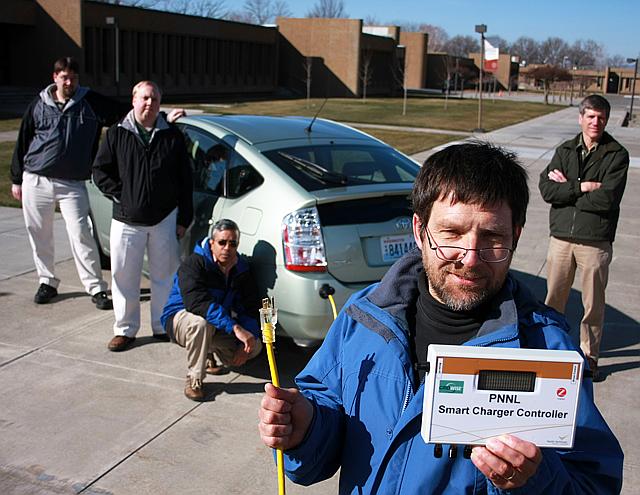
Scientists and engineers at Pacific Northwest National Laboratory developed the Smart Charger Controller to manage peak demands in the electric grid once a mass of electric vehicle hit the road. The controller tells an electric vehicle's battery when to start and stop re-charging based upon existing stress in the grid.